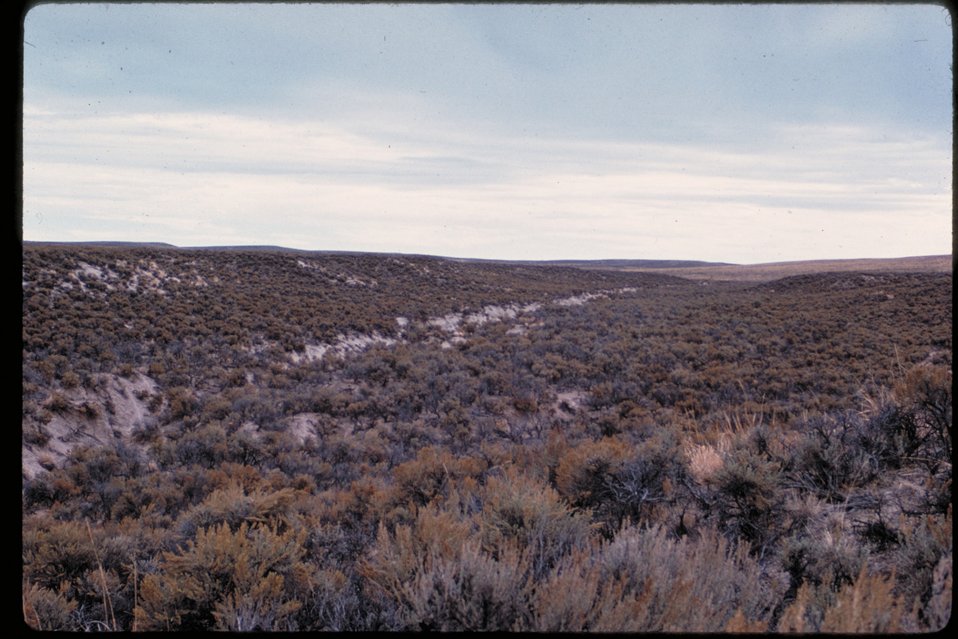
Oregon Trail near Cassia Cultural resource Historic area LSRD Lower Snake River District